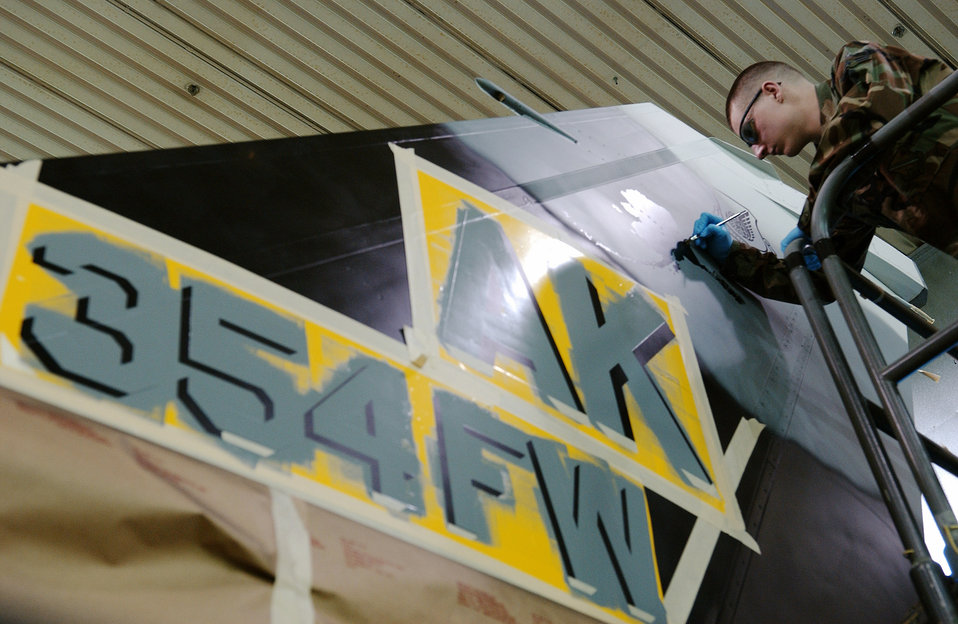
Aggressor fleet paint scheme nears completion

Airman 1st Class Daniel Herbert touches up the state of Alaska stencil design on the tail March 26 at Eielson Air Force Base, Alaska. Airmen in the sheet metal shop work on stenciling the flag ship tail with unique markings setting it apart from other aggressor aircraft from the 18th Aggressor Squadron.